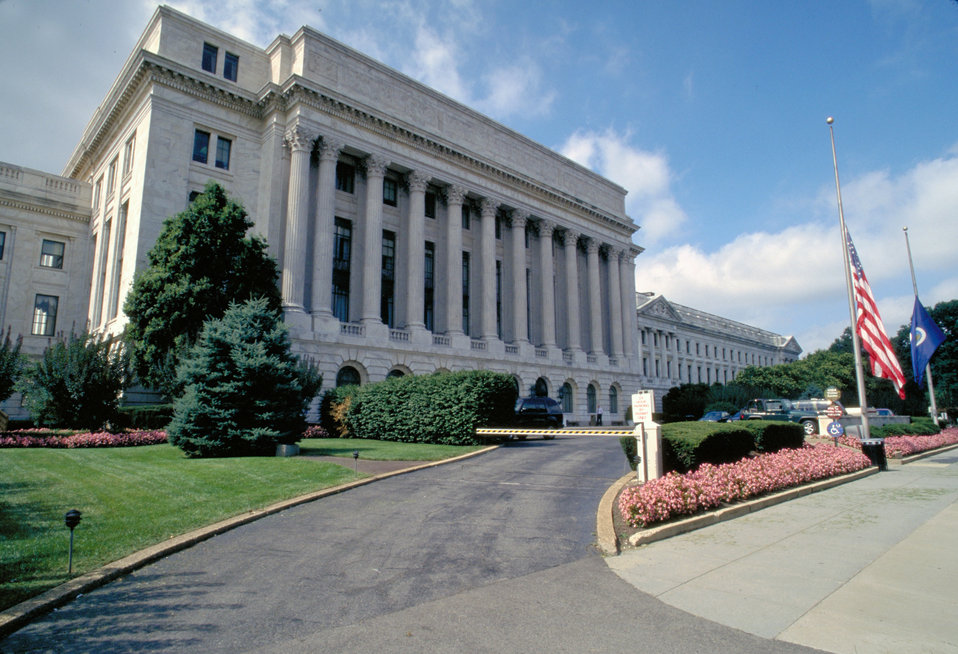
The Jamie L. Whitten, Federal Building, U.S. Department of Agriculture in Washington, D.C.